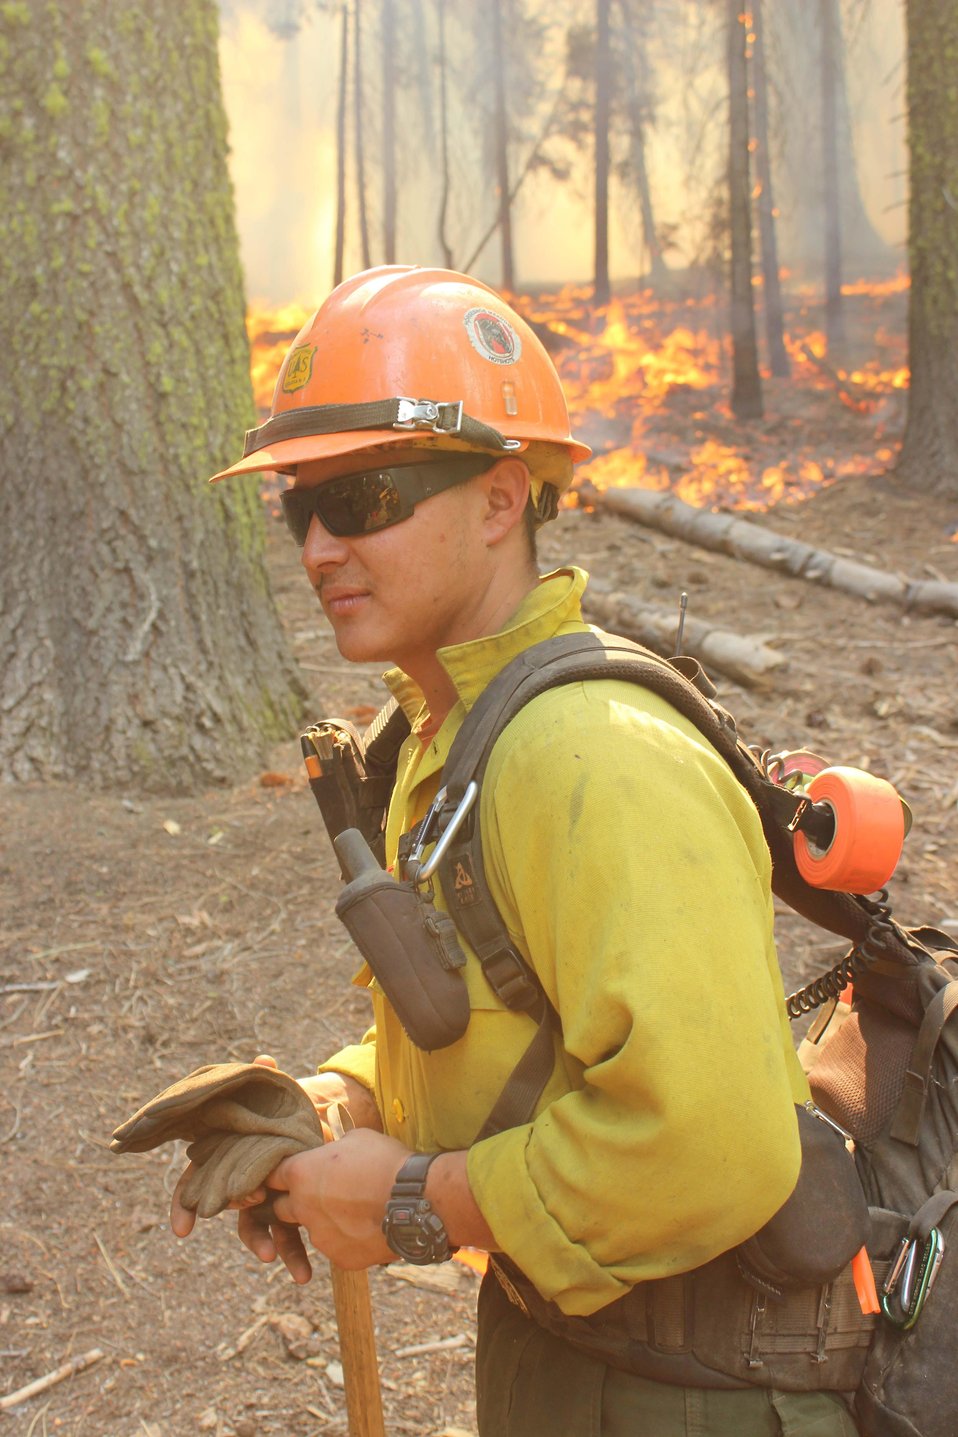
Horseshoe Meadows Hotshots foreman at work on the Rim Fire. The Rim Fire in the Stanislaus National Forest near in California began on Aug. 17, 2013 and is under investigation. The fire has consumed approximately 235,841 acres and is 70% contained.